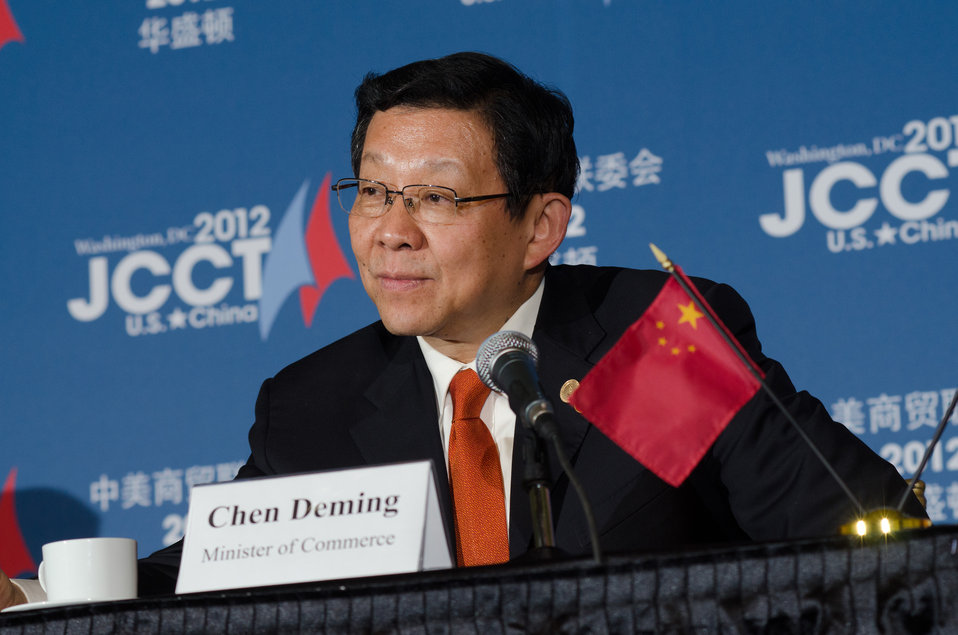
China's Minister of Commerce Chen Deming listens to a question from international news media journalists at the 23rd Session of the U.S. China Joint Commission on Commerce and Trade (JCCT) press conference at the Andrew W. Mellon Auditorium in Washington, D.C. on Wednesday, Dec. 19, 2012. The JCCT holds high-level plenary meetings on an annual basis to review progress made by working groups that focus on a wide variety of trade issues. These working groups meet throughout the year to address topics such as intellectual property rights, agriculture, pharmaceuticals and medical devices, information technology, tourism, commercial law, environment, and statistics.